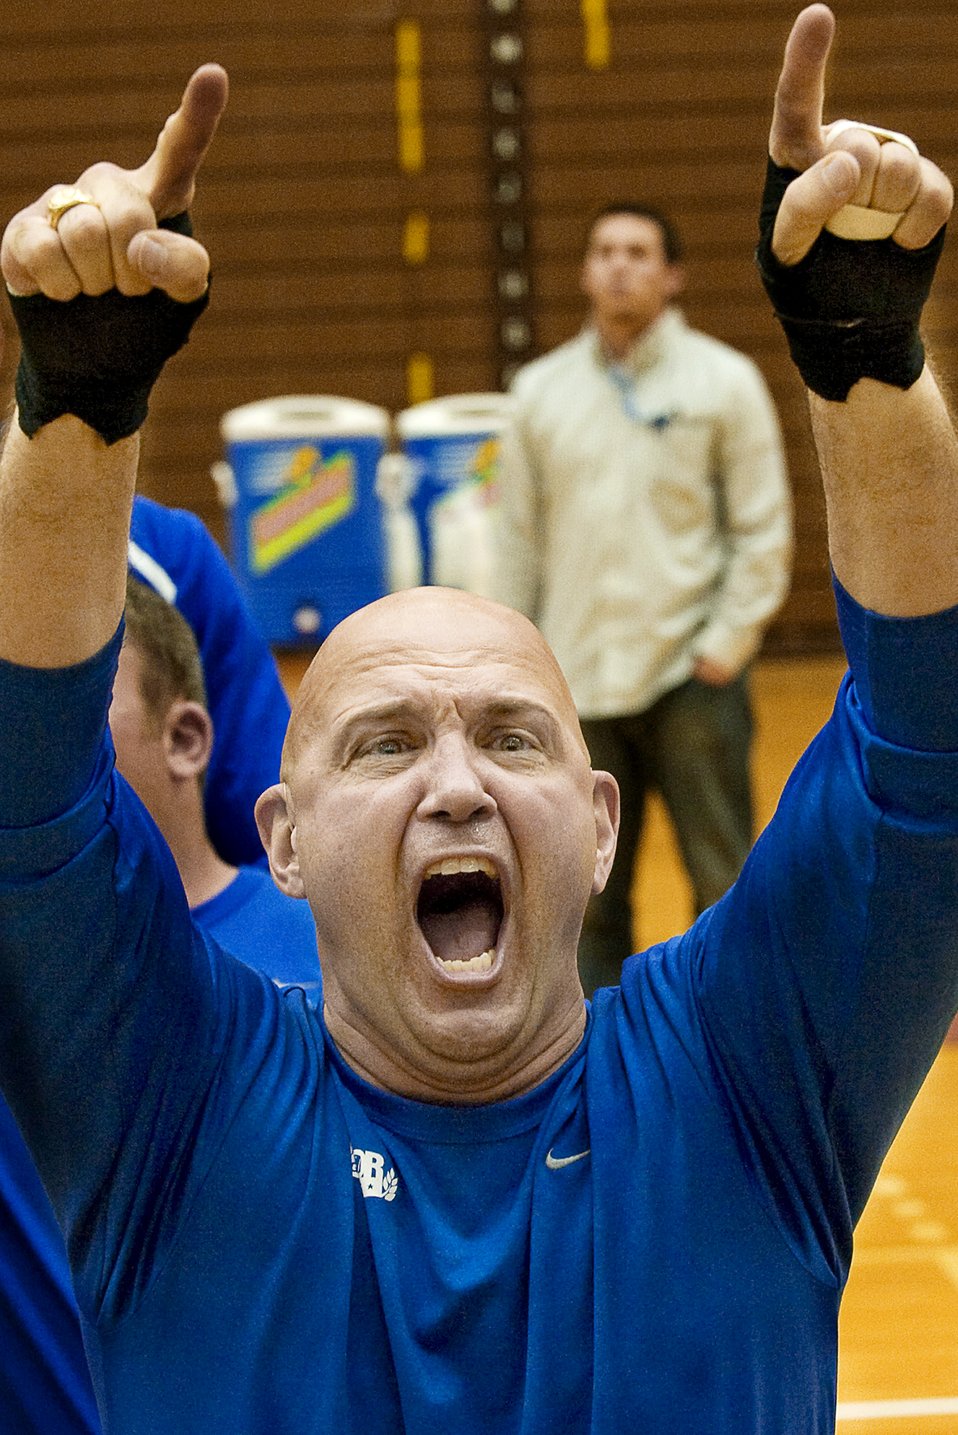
Team Air Force wins game

Chief Master Sgt. Damian Orslene celebrates after the Warrior Games bronze medal match against the Navy May 12, 2010, at the Olympic Training Center in Colorado Springs, Colo. The Air Force went on to win the game 13-10.